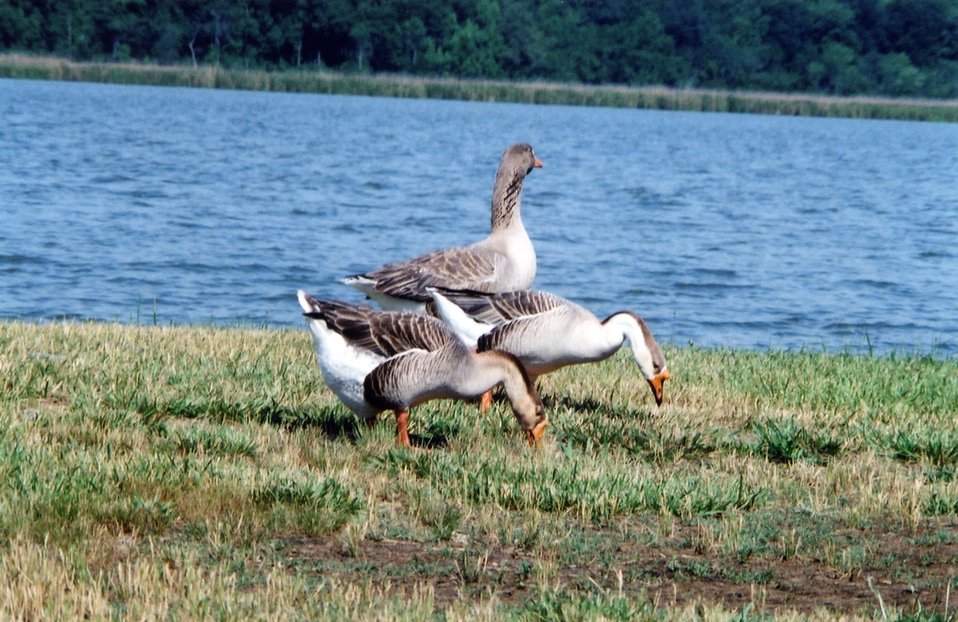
Non-native Chinese geese along the Patuxent River.